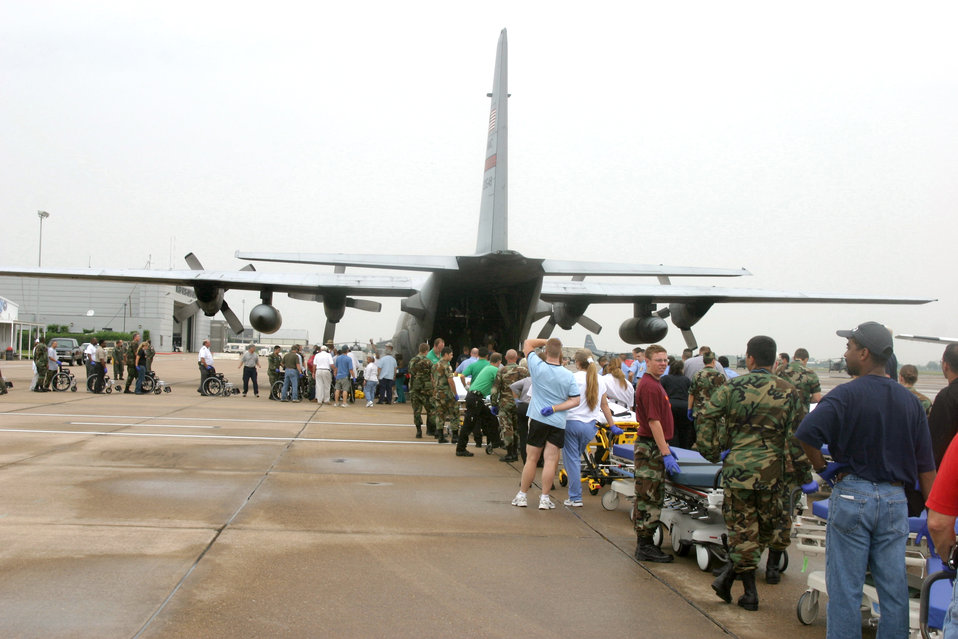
Hurricane relief mission

ELLINGTON FIELD, Texas -- Emergency responders here line up to help unload injured evacuees Sept. 3. C-130 Hercules crews from the 50th Airlift Squadron at Little Rock Air Force Base, Ark., teamed up with Airmen from the 452nd Aeromedical Evacuation Squadron at March Air Reserve Base, Calif., to relocate sick and injured patients devastated after Hurricane Katrina.